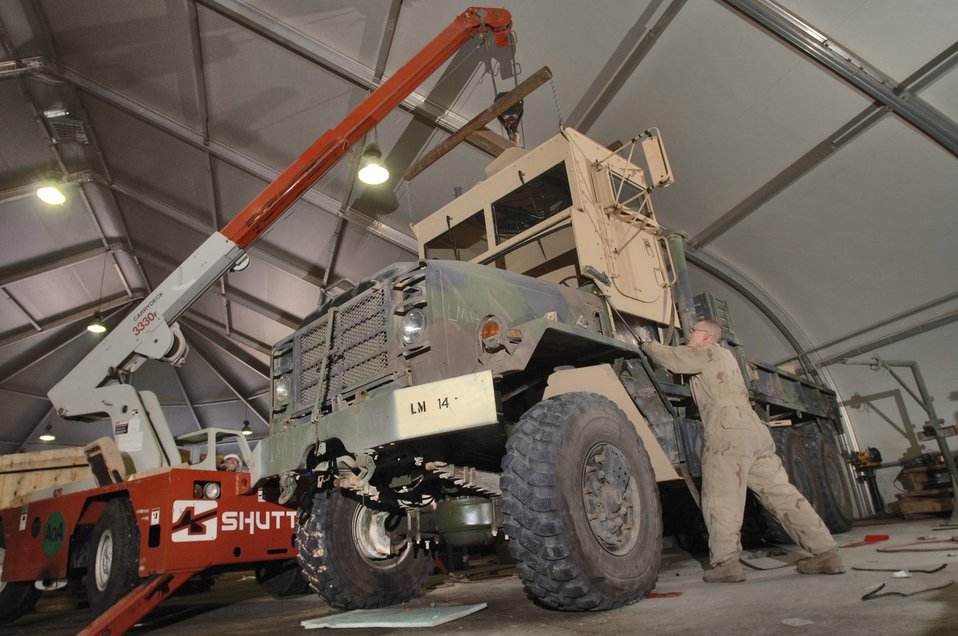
Up-armor for troops

BALAD AIR BASE, Iraq (AFPN) - Airman 1st Class Roger Hild and Staff Sgt. Kenneth Pease operate a crane as they lower an add-on-armor cab onto the lower cab section of a truck tractor. The up-armor kit is a permanent modification. This will include new air ride seats and air conditioning. The armor provides the driver and gunner protection against weapons fire and improvised explosive device explosions. Sergeant Pease and Airman Hild are assigned to the 732nd Expeditionary Logistics Squadron and are deployed from Spangdahlem Air Base, Germany.